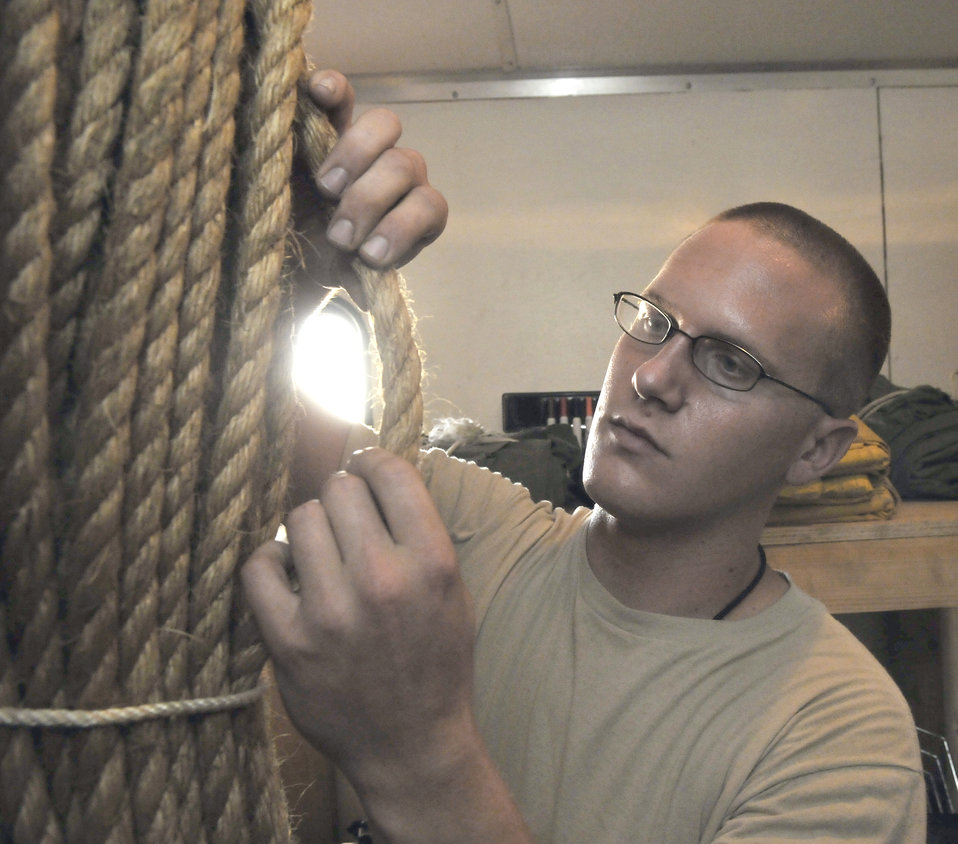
Crash recovery

Senior Airman William Davenport inspects rope for serviceability July 9, 2010, at Joint Base Balad, Iraq. Rope is used as guidelines when hoisting and moving damaged aircraft from the airfield. Airmen Davenport is a 332 Expeditionary Maintenance Squadron crash recovery, wheel and tire technician.